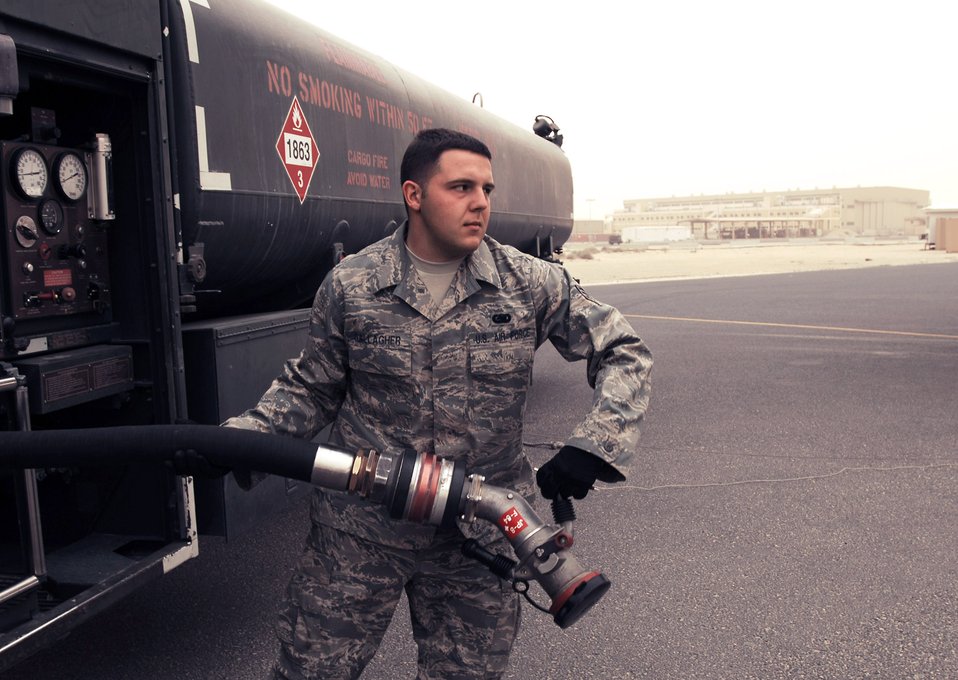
Fueled to fight

Senior Airman Bryan Gallagher pulls a three-inch hose off an R-11 fuel truck toward a C-130 Hercules needing to be refueled Feb. 26 in Southwest Asia. The fuels management flight is responsible for inventorying the fuel daily, and the transfer and issue of fuel to both vehicle operators and aircrews in support of operations Enduring Freedom and Iraqi Freedom. Airman Gallagher is a fuels technician from the 386th Expeditionary Logistics Readiness Squadron.